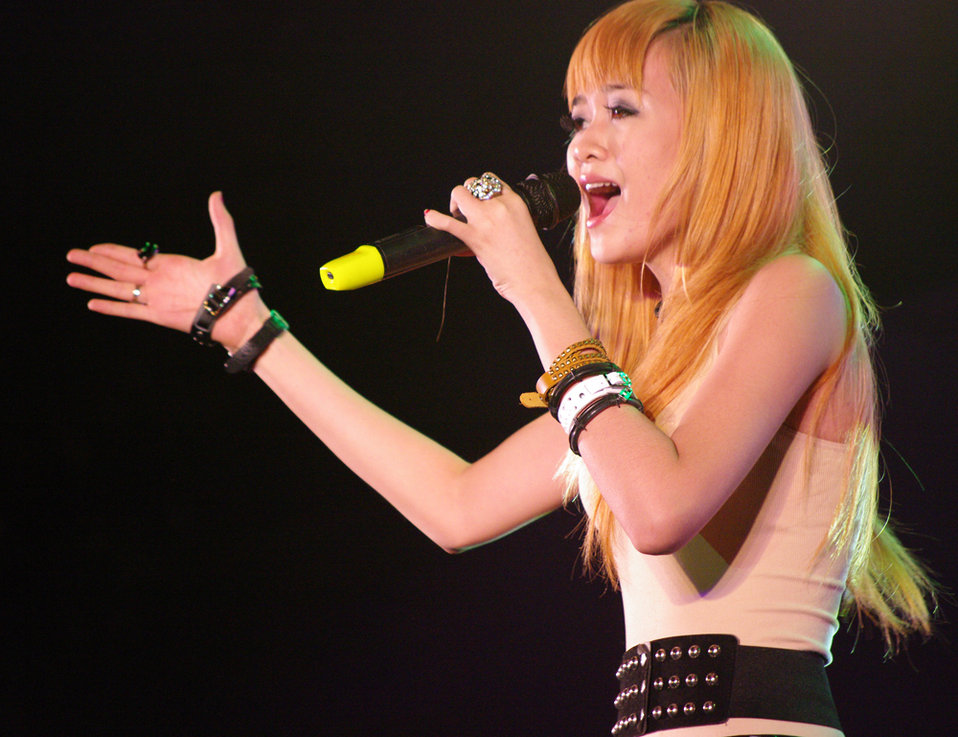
USAID supports dance4life to raise awareness of HIV and fight stigma in Vietnam

Singer My Dung joins the campaign.